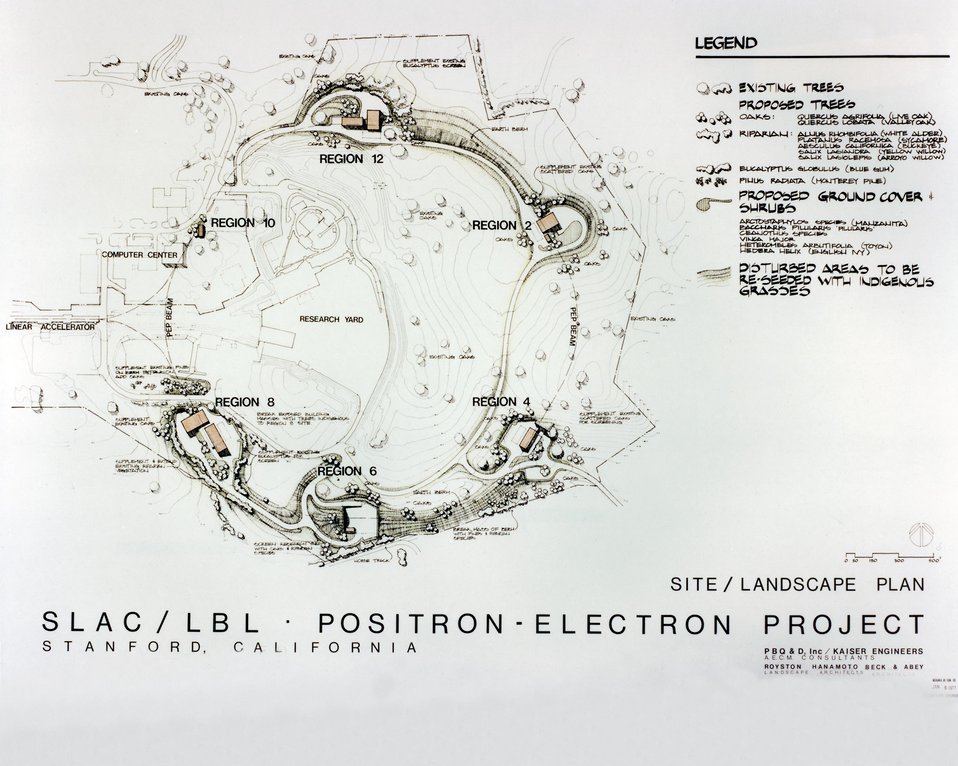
DRAWING OF OVERALL PEP SITE PLAN.

THE POSITRON-ELECTRON PROJECT (PEP) IS A JOINT UNDERTAKING OF STANFORD LINEAR ACCELERATOR CENTER (SLAC) AND THE LAWRENCE BERKELEY LABORATORY (LBL). THE PEP MACHINE IS DESIGNED TO STORE BEAMS OF ELECTRONS AND POSITRONS CIRCULATING IN OPPOSITE DIRECTIONS AT SINGLE-BEAM ENERGIES BETWEEN 4 GEV AND 18 GEV. THE SOURCE OF THE BEAMS WILL BE THE PRESENT SLAC ACCELERATOR. THE COUNTER-ROTATING BEAMS OF ELECTRONS AND POSITRONS WILL COLLIDE WITH EACH OTHER AT SIX POINTS IN THE MACHINE. THESE COLLISION OR BEAM-INTERACTION POINTS WILL BE USED FOR HIGH-ENERGY PHYSICS EXPERIMENTS.